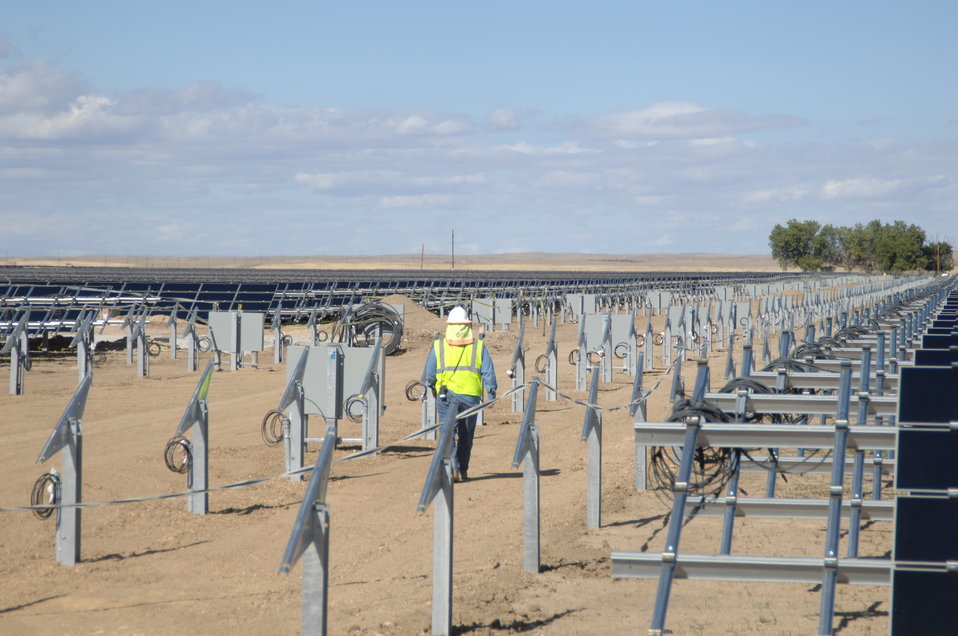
Work at Topaz Solar 1